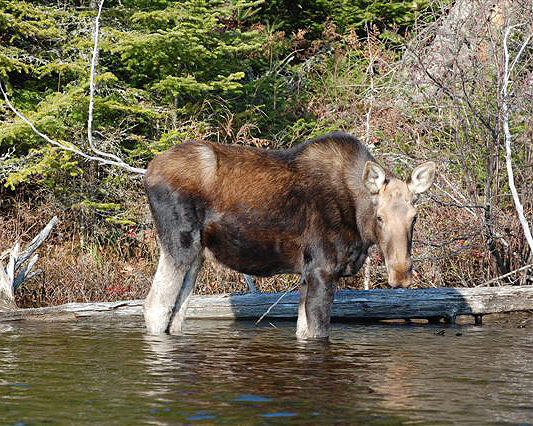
Photo of the Week - Moose (RI)

Moose photographed at Trustom Pond National Wildlife Refuge.